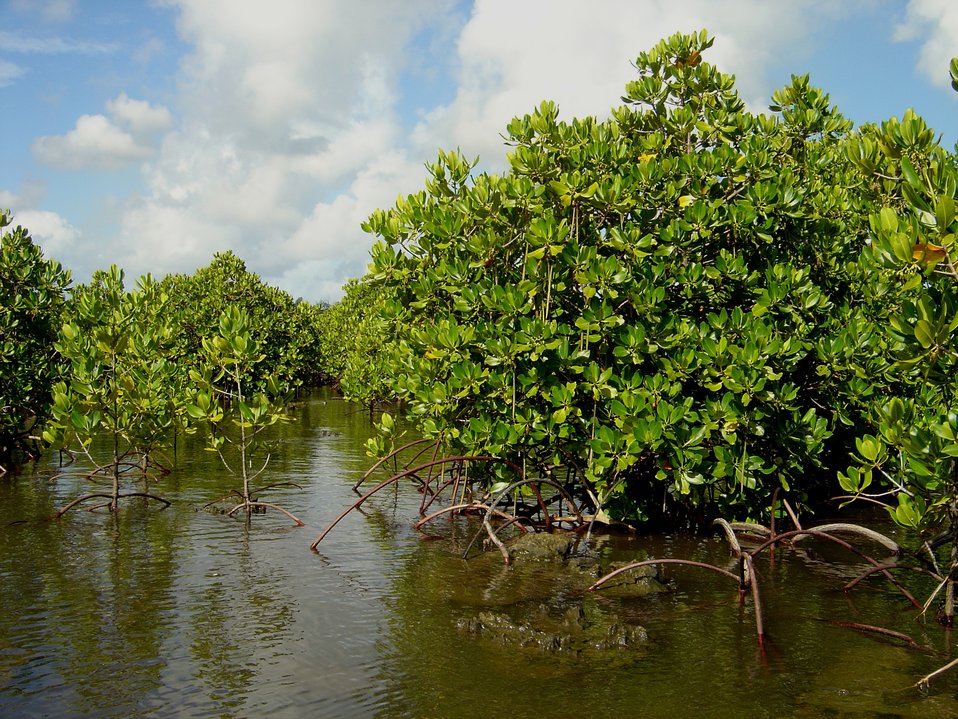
Mangroves growing in the coral rocks of the Guam coastline.